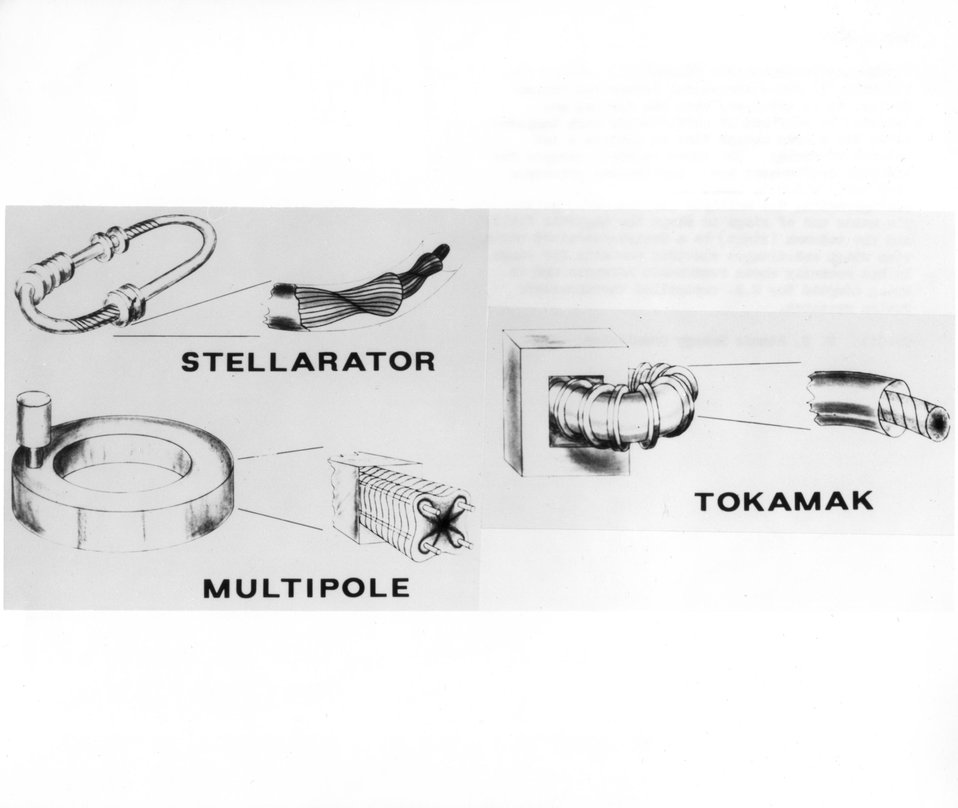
For a successful controlled fusion device, it is necessary that the ionized gas (plasma) be confined at sufficiently high temperatures for a long enough time to achieve a net release of energy. c. 1971